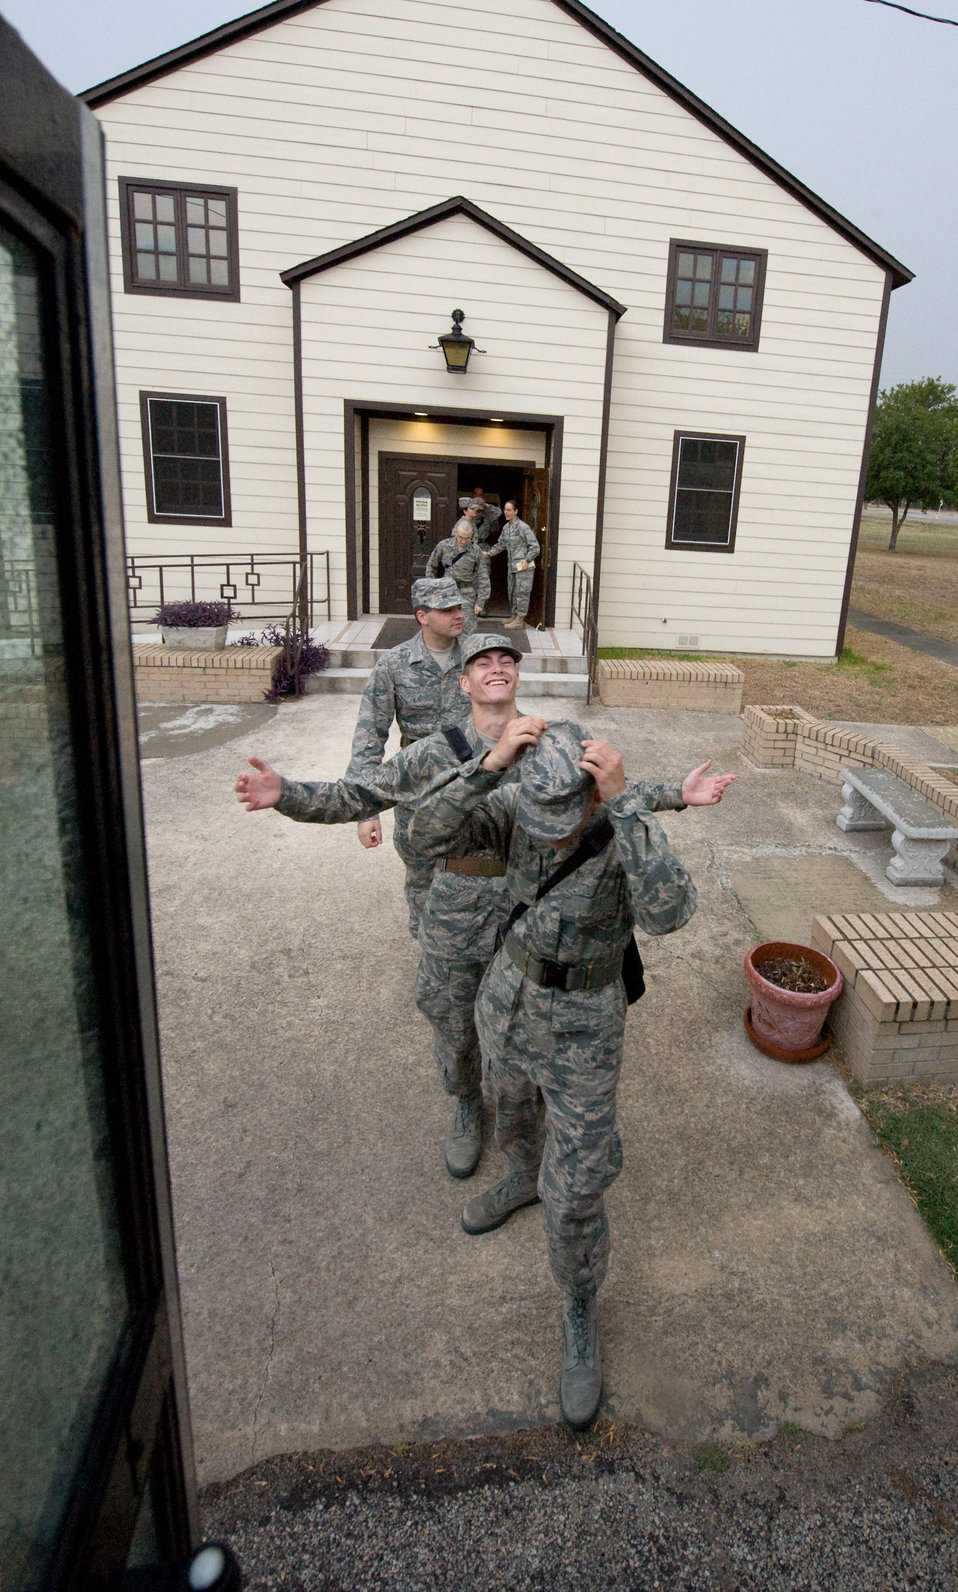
U.S. Air Force Chaplaincy

Trainee Kerry Banta enjoys the sprinkle of rain between chapel and bus after the evening le'il shabbat service on Friday, Sept. 4, 2009 at Lackland Air Force Base's Airmen Memorial Chapel. At the door, Chaplain, Captain Sarah D. Schechter bids shalom and farewell to the more than 25 basic military trainees and other attendees who participated in a religious education class, then Ma'ariv prayer service for the setting of the sun, followed by a meal provided by lay leaders supporting the service. Because of training schedules some ceremonies and events are earlier than traditionally held. By order of commanders, those who want to attend any or all religious services of their choosing are given full permission and opportunity to do so. Chaplain, Captain Schechter is an Operation Iraqi Freedom veteran and considers her deployment there to be one of the highlights of her career. Schechter is the first woman rabbi in the U.S. Air Force.